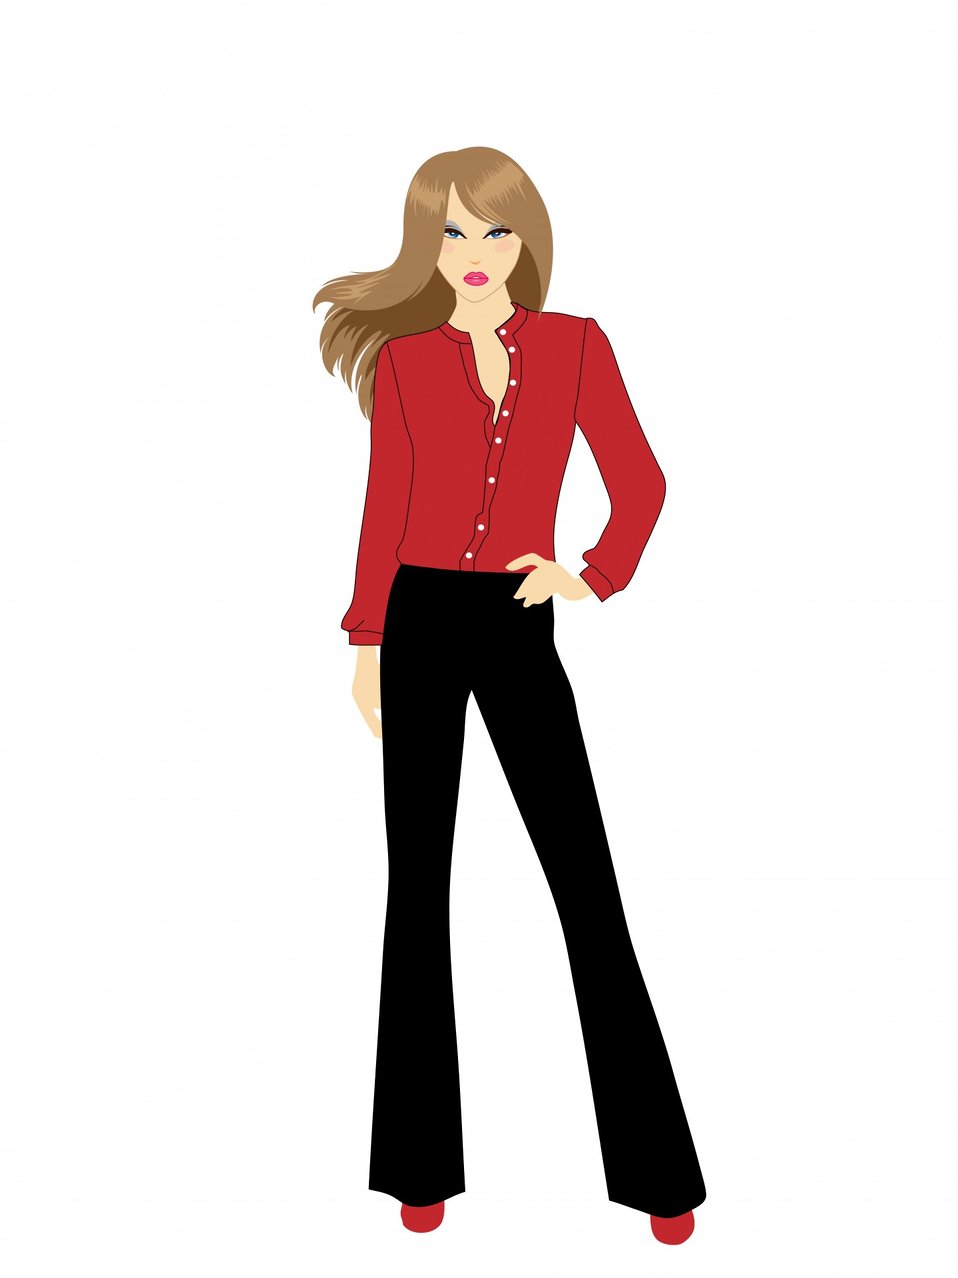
Woman of fashion

Trendy, sexy modern woman illustration.